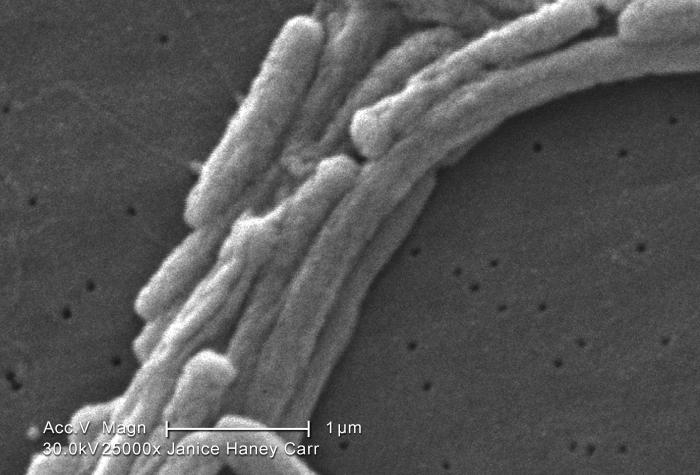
Under a very high magnification of 25000X, this scanning electron micrograph (SEM) depicted a grouping of Gram-negative Legionella pneumophila bacteria. Please note that you're able to see a number of the flagella emanating from these organisms. Please see PHIL 11092 through 11152 for additional SEMs of these organisms, specifically PHIL 11106 for a colorized version of this image, which better features the flagella.